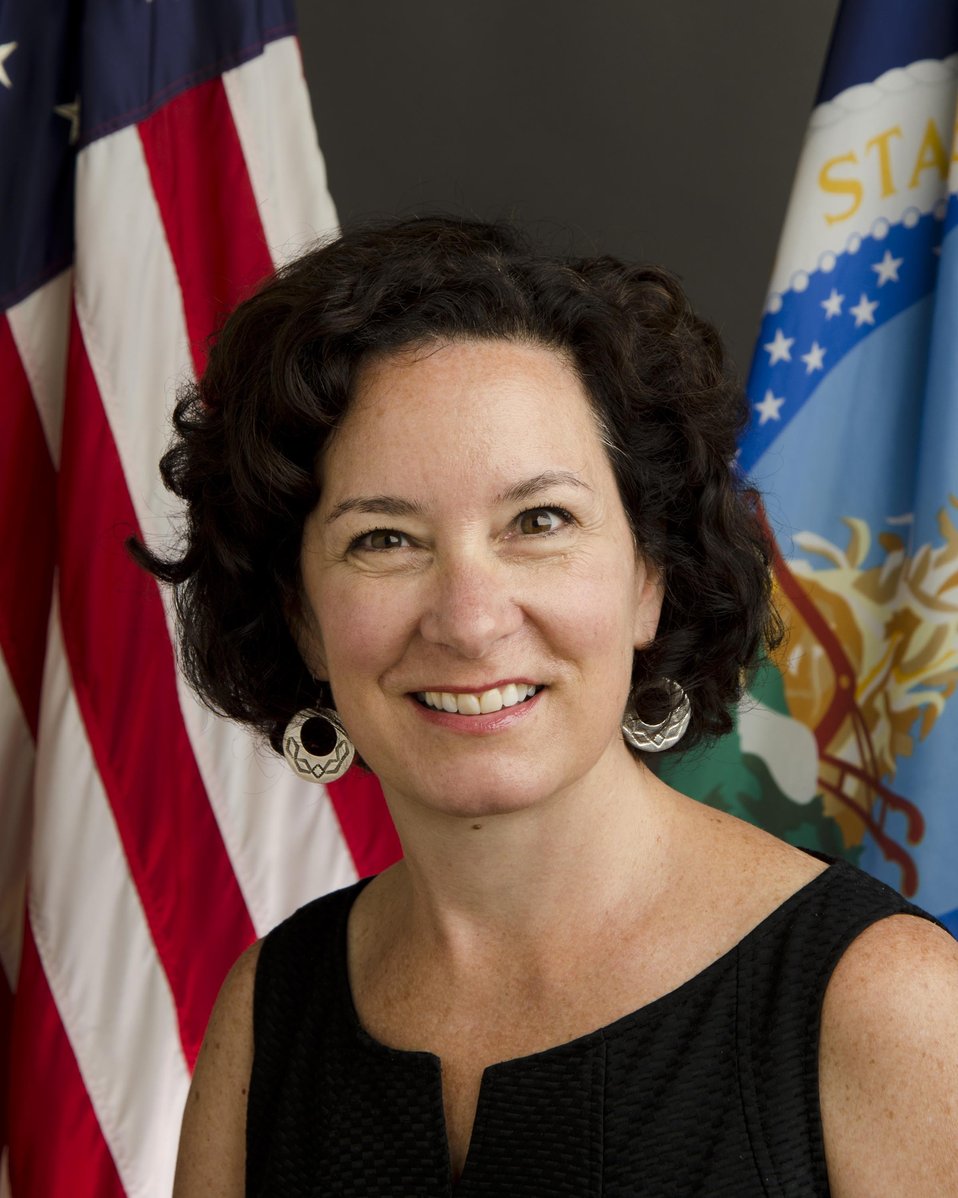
20130724-OSEC-KJH-2115 Patrice Kunesh, Deputy Under Secretary, Rural Development

Patrice Kunesh, Deputy Under Secretary, Rural Development. Portrait.